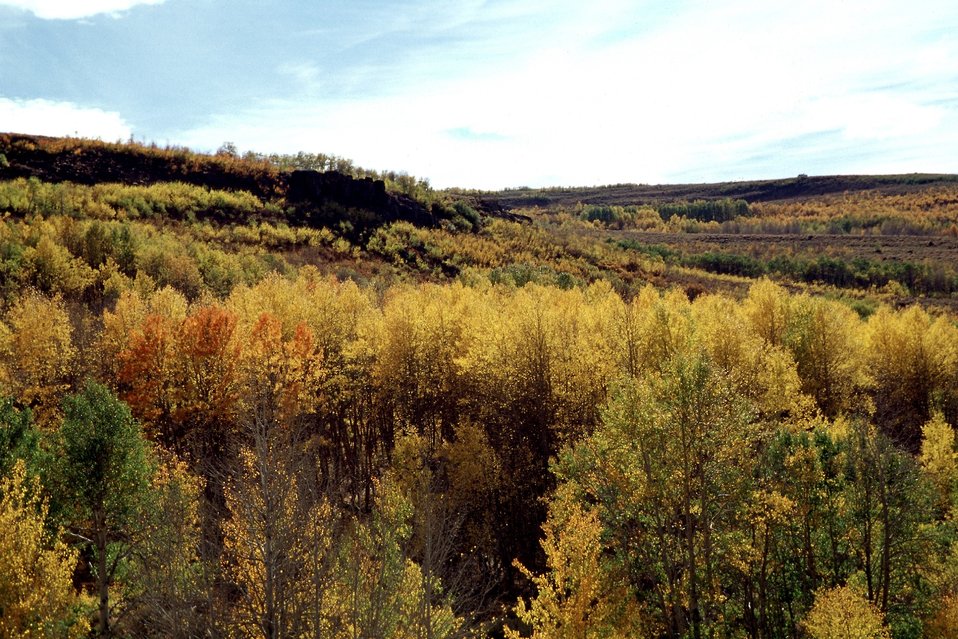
Aspens at Fish Creek, Steen's Mountain.